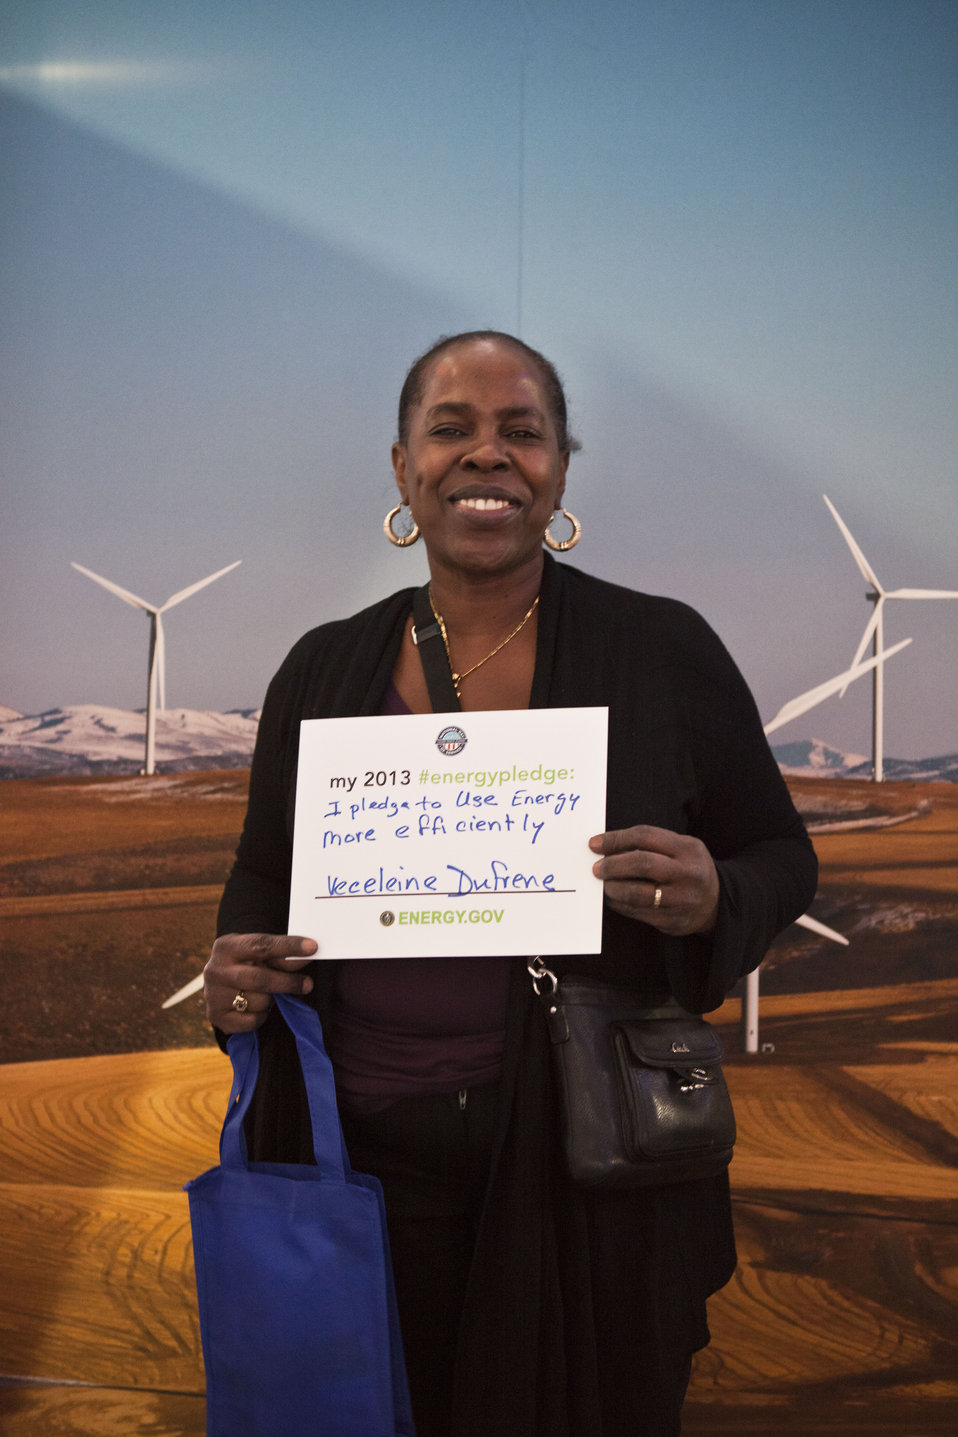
What's your #energypledge?